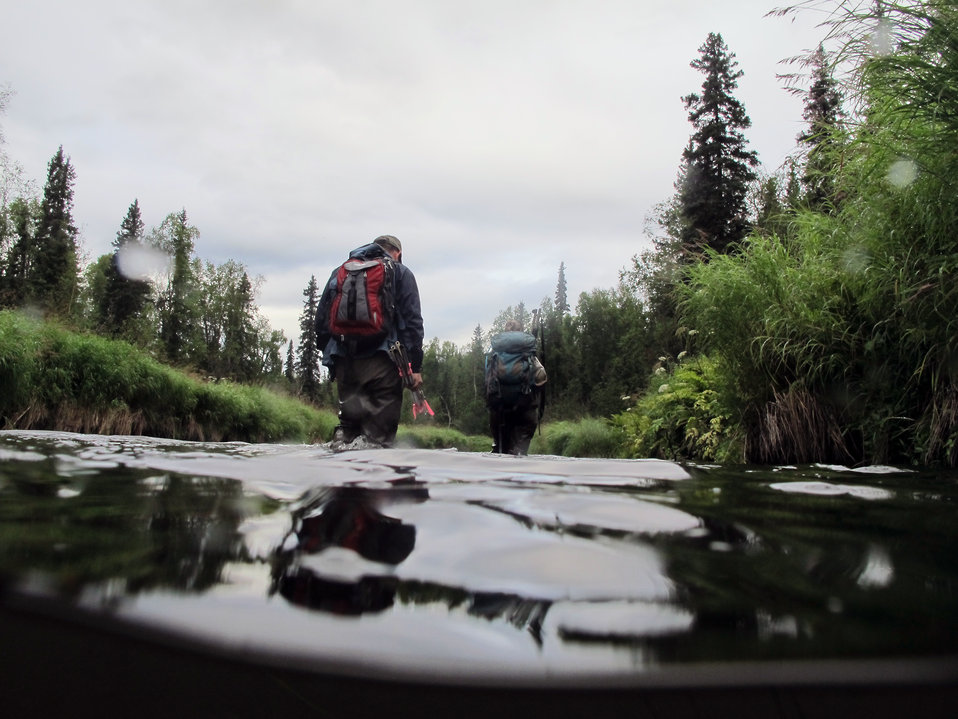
Up Rabideux Creek

Anchorage staff hike up Reabideux Creek to assess the quality of coho salmon spawning habitat near Talkeetna, Alaska. USFWS/Katrina Mueller